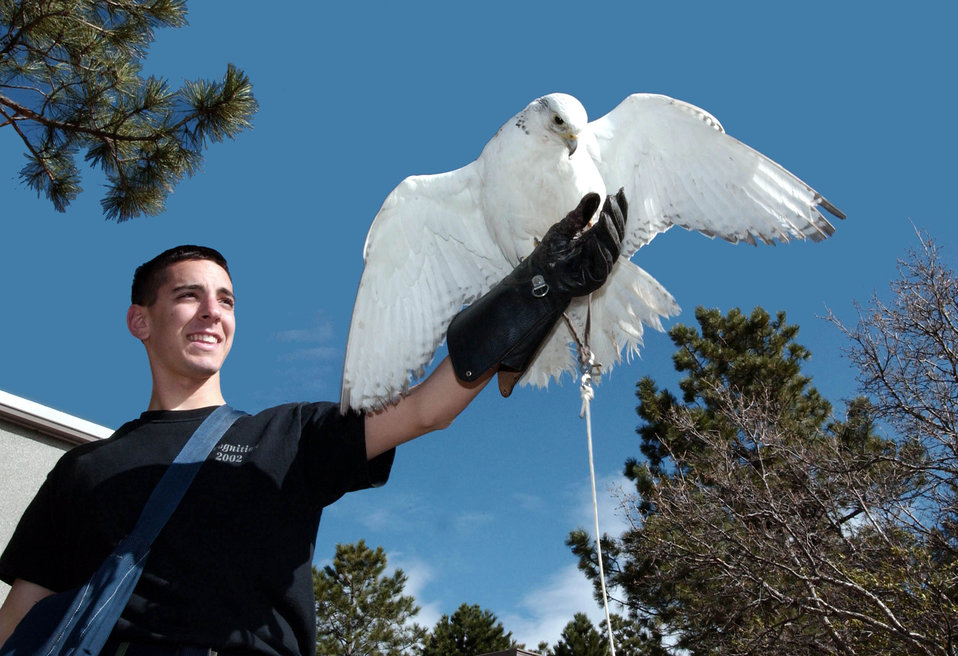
Cannone and Aurora

U.S. AIR FORCE ACADEMY, Colo. -- Cadet Anthony Cannone trains Aurora, a gyr falcon and academy mascot. The 11 birds in the falconry program here were vaccinated against the West Nile virus after seven magpies were found dead on campus.